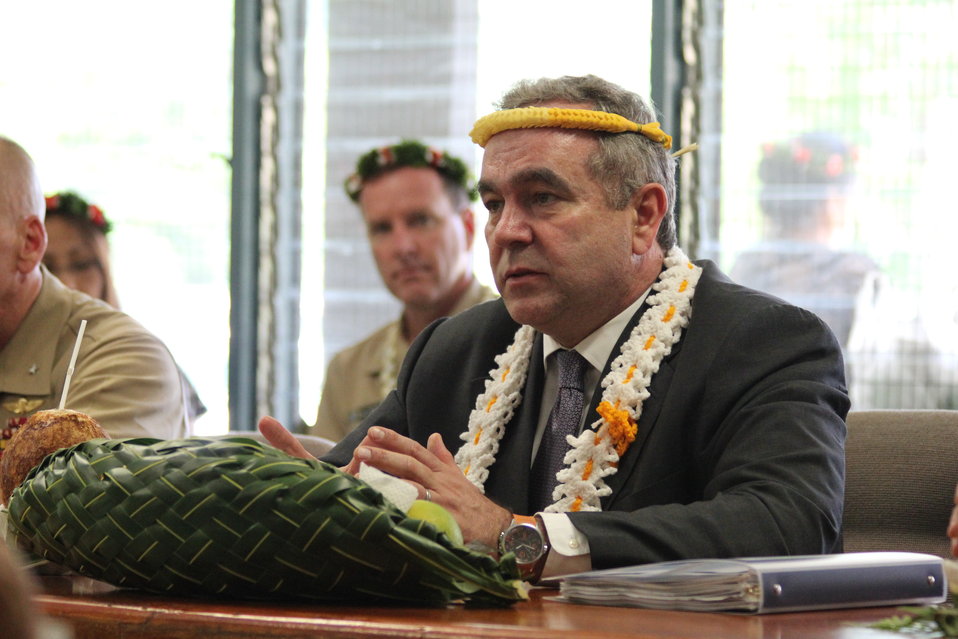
Assistant Secretary Campbell speaks at a courtesy call at Federated States of Micronesia Congress

Assistant Secretary of State for East Asian and Pacific Affairs Kurt Campbell, right center, speaks at a courtesy call of the Federated States of Micronesia Congress in Palikir, Pohnpei, on July 1, 2011. Assistant Secretary Campbell is leading an inter-agency Pacific Island tour to enhance bilateral political, economic, and security relations in the region. The U.S. Delegation includes: Pacific Fleet Commander Admiral Patrick Walsh, Office of the Secretary of Defense South/Southeast Asia Principal Director Brigadier General Richard Simcock, and U.S. Agency for International Development (USAID) Assistant Administrator for Asia Nisha Biswal.